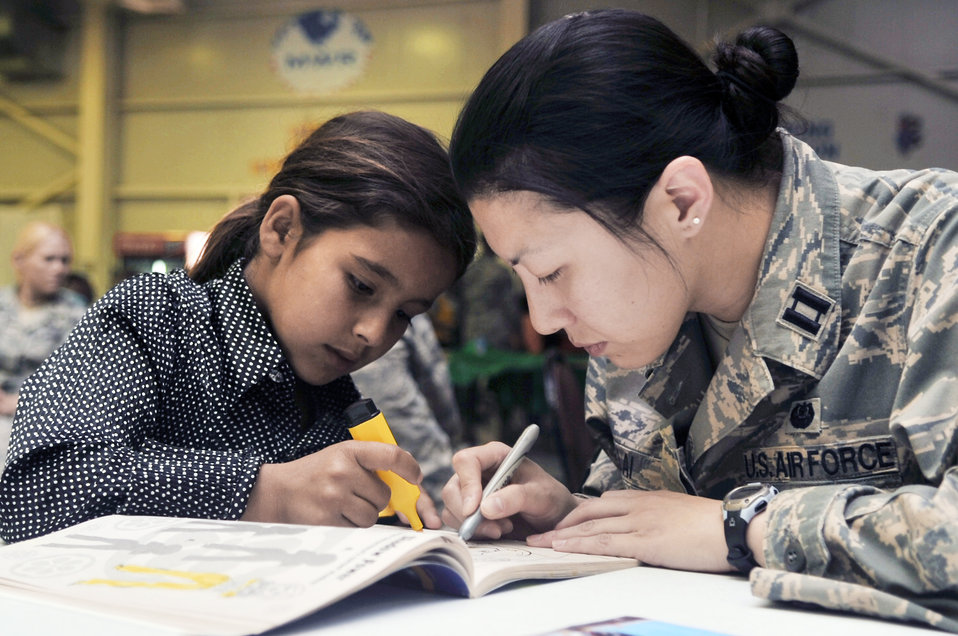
Balad servicemembers strengthen bonds with community, Iraqi children

Capt. Erin Lai colors a picture with an Iraqi girl during Iraqi Kids Day April 24, 2010, at Joint Base Balad, Iraq. Captain Lai is a judge advocate with the 332nd Air Expeditionary Wing.